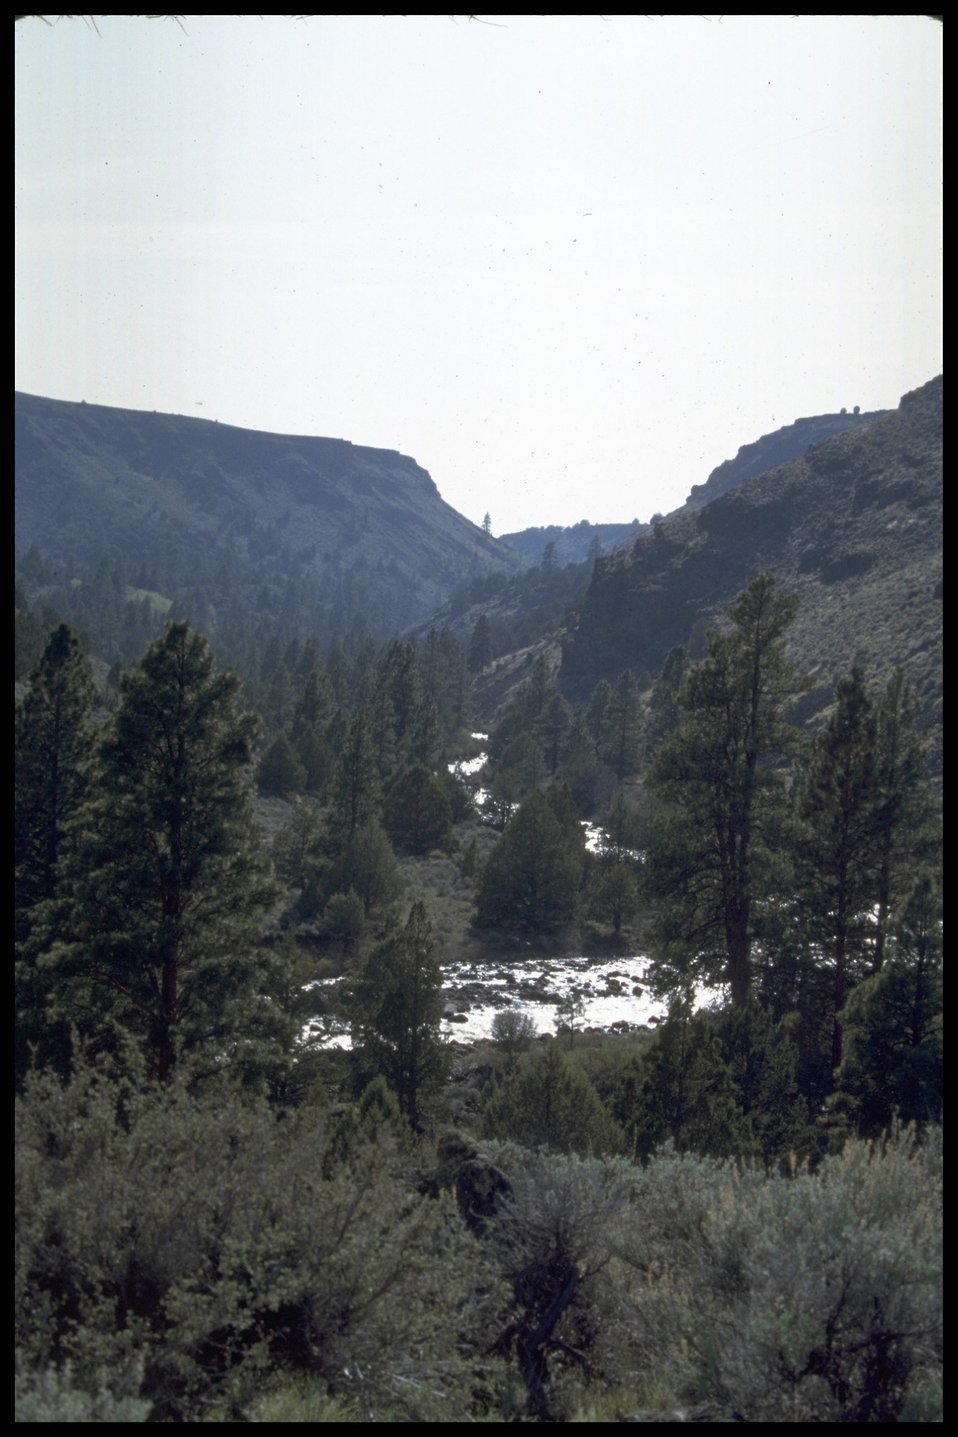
Deep Creek, Lakeview District.